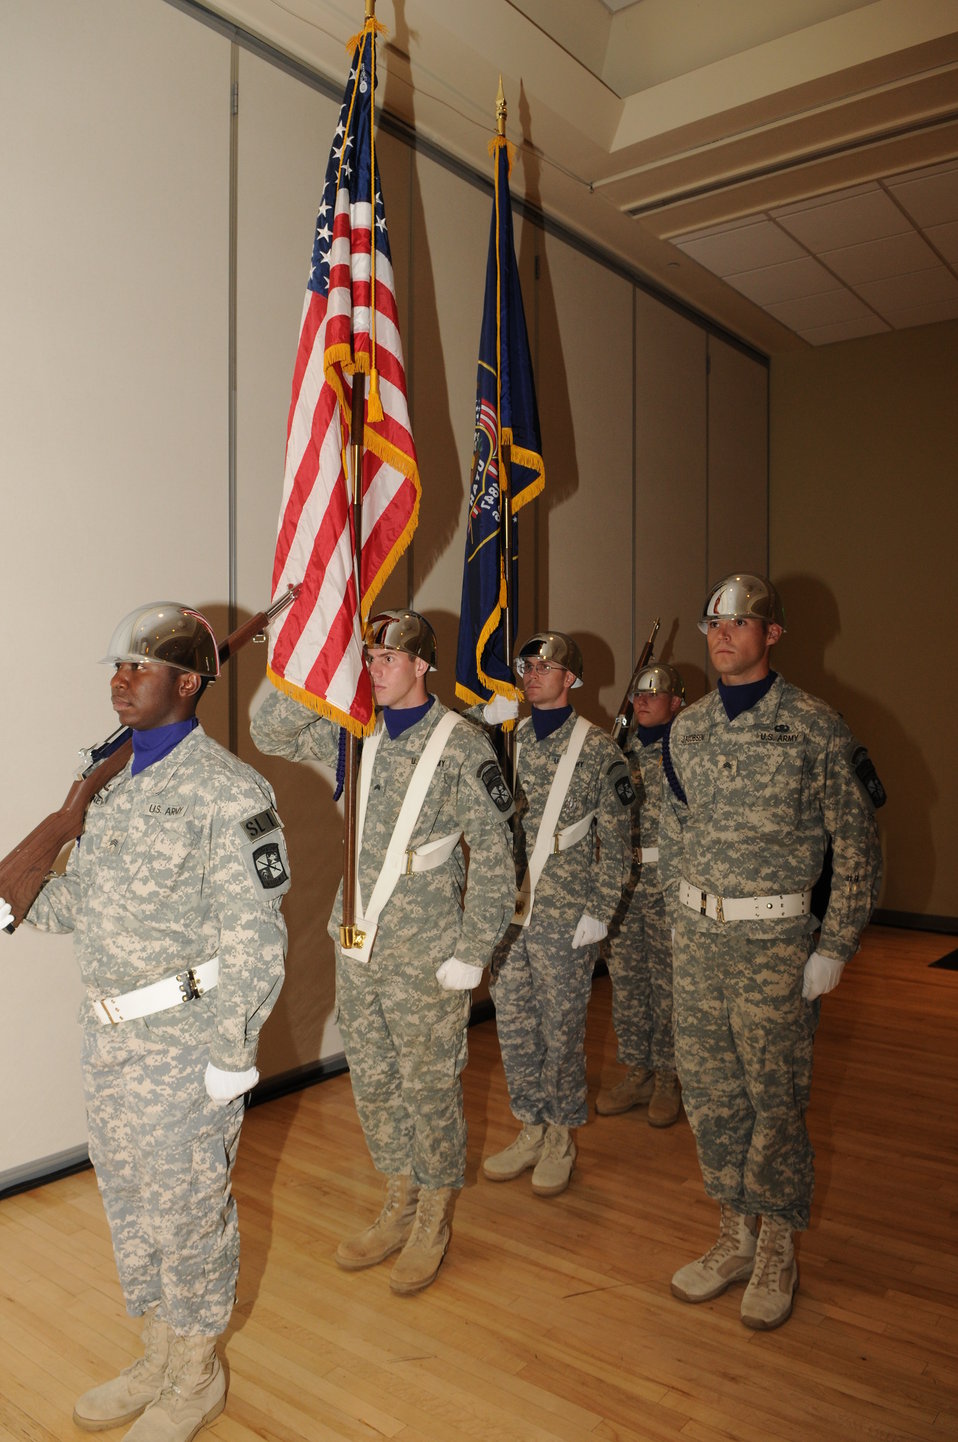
Presentation of Colors

The U.S. Fish & Wildlife Service sponsored the 2012 Federal Duck Stamp Art Contest September 28 and 29 in Ogden, Utah, at Weber State University. A panel of five judges was responsible for choosing the art work used to design the 2013-2014 Migratory Bird Hunting and Conservation Stamp.